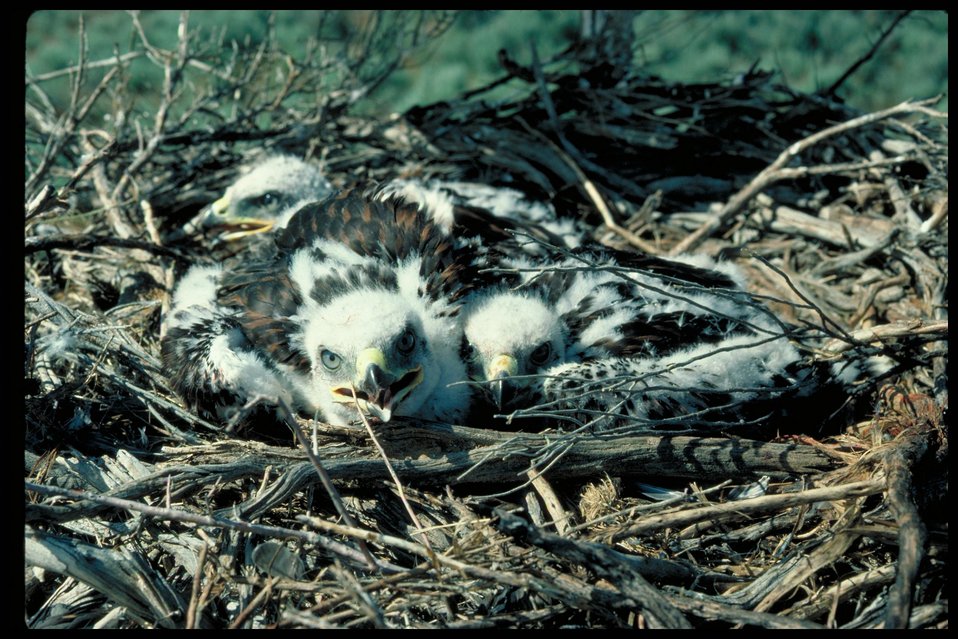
Slater's Flat Birds of Prey National Conservation Area BOP Owyhee Field Office LSRD Lower Snake River District